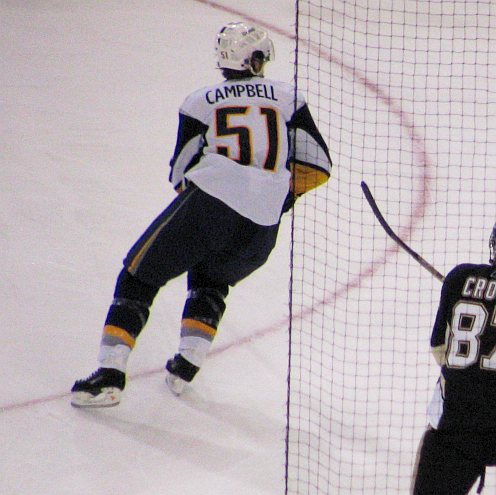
Picture of en:Brian Campbell during a preseason game on Friday, September 28, 2007 against the en:Pittsburgh Penguins